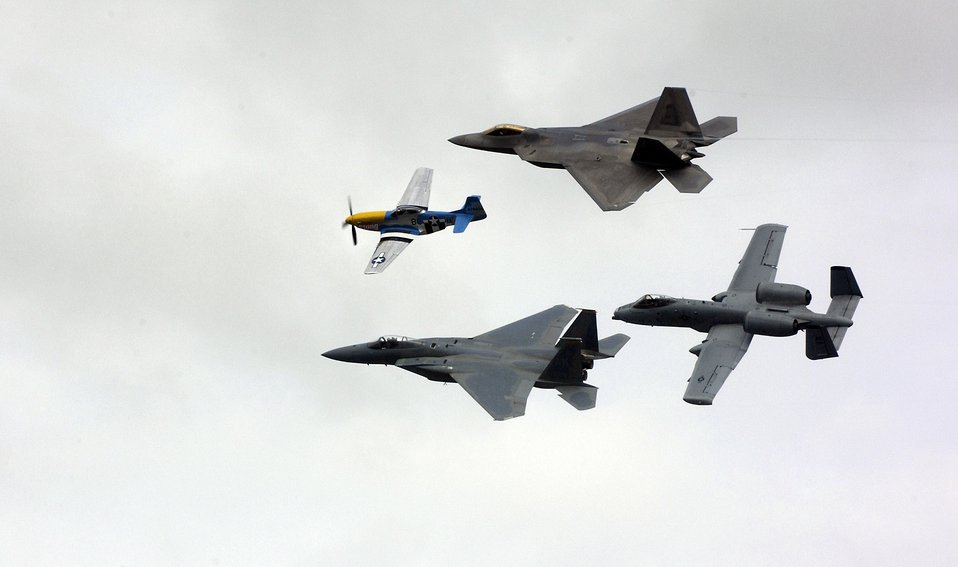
Arctic Thunder

A heritage flight with a P-51 Mustang, F-15 Eagle, F-22 Raptor and A-10 Thunderbolt II fly over the crowd at the Arctic Thunder air show at Elmendorf Air Force Base, Alaska, on Aug. 12. The two-day event drew nearly 136,000 visitors.